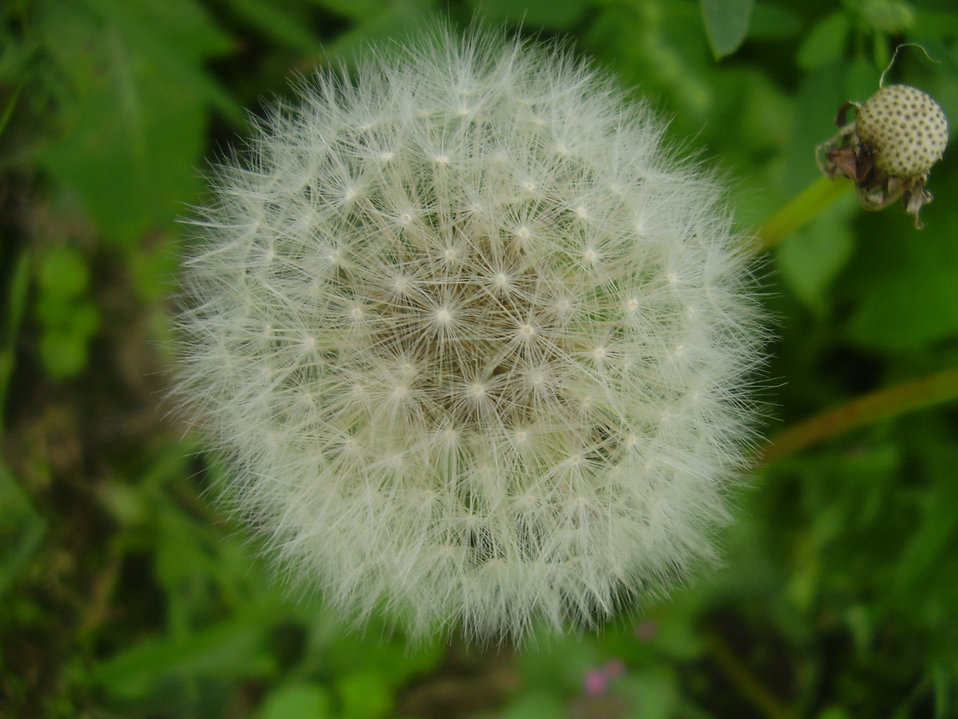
Fran√ßais†: Pissenlit